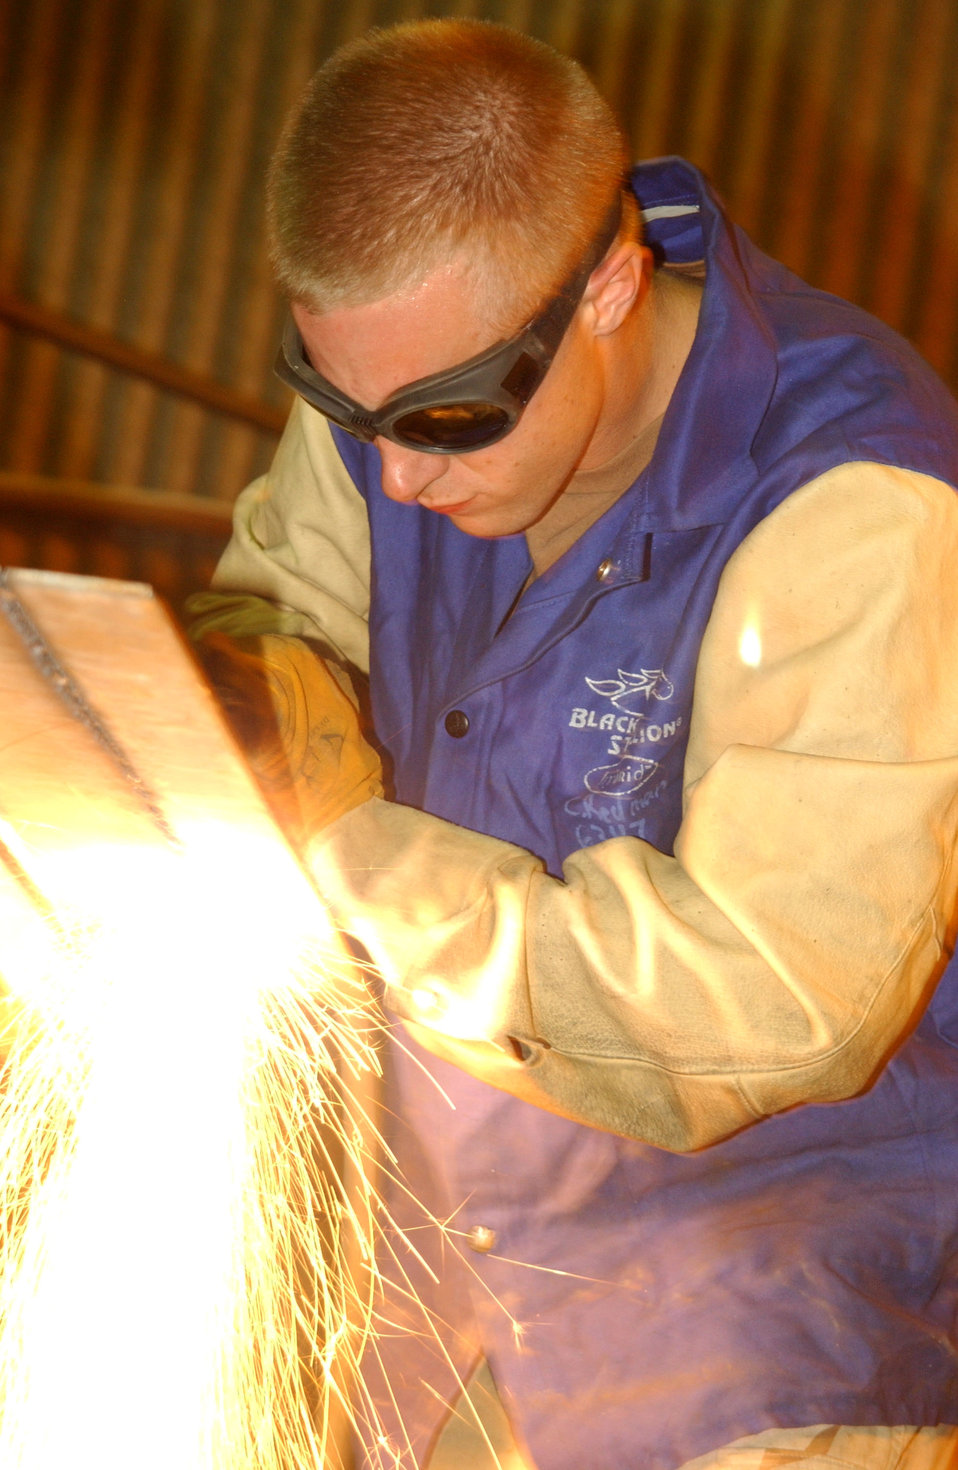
Metal techs spark airpower over Iraq

Senior Airman Chris Redman cuts a piece of diamond-plate steel with a plasma cutter in September at Balad Air Base, Iraq. Metals technicians require a proficiency on many different metals to fabricate and repair parts for aircraft. Airman Redman is a 332nd Expeditionary Maintenance Squadron metals technician.